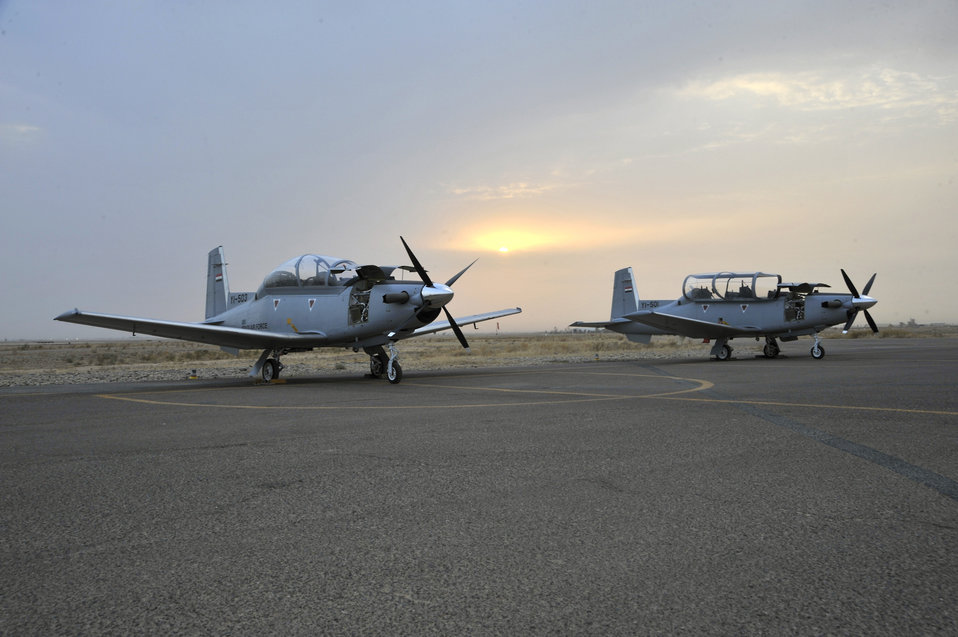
U.S. Airmen train future Iraqi air force pilots

Iraqi air force T-6 Texan IIs sit on the flight line Sept. 26, 2010, at Tikrit Air Base, Iraq. Instructor pilots from the 52nd Expeditionary Flying Training Squadron are training and advising the first group of Iraqi air force instructor pilots on the T-6A Texan II as part of the advise, train, assist and equip mission of Operation New Dawn. Once qualified, the Iraqi air force pilots will become instructor pilots and continue to train the next generation of pilots.